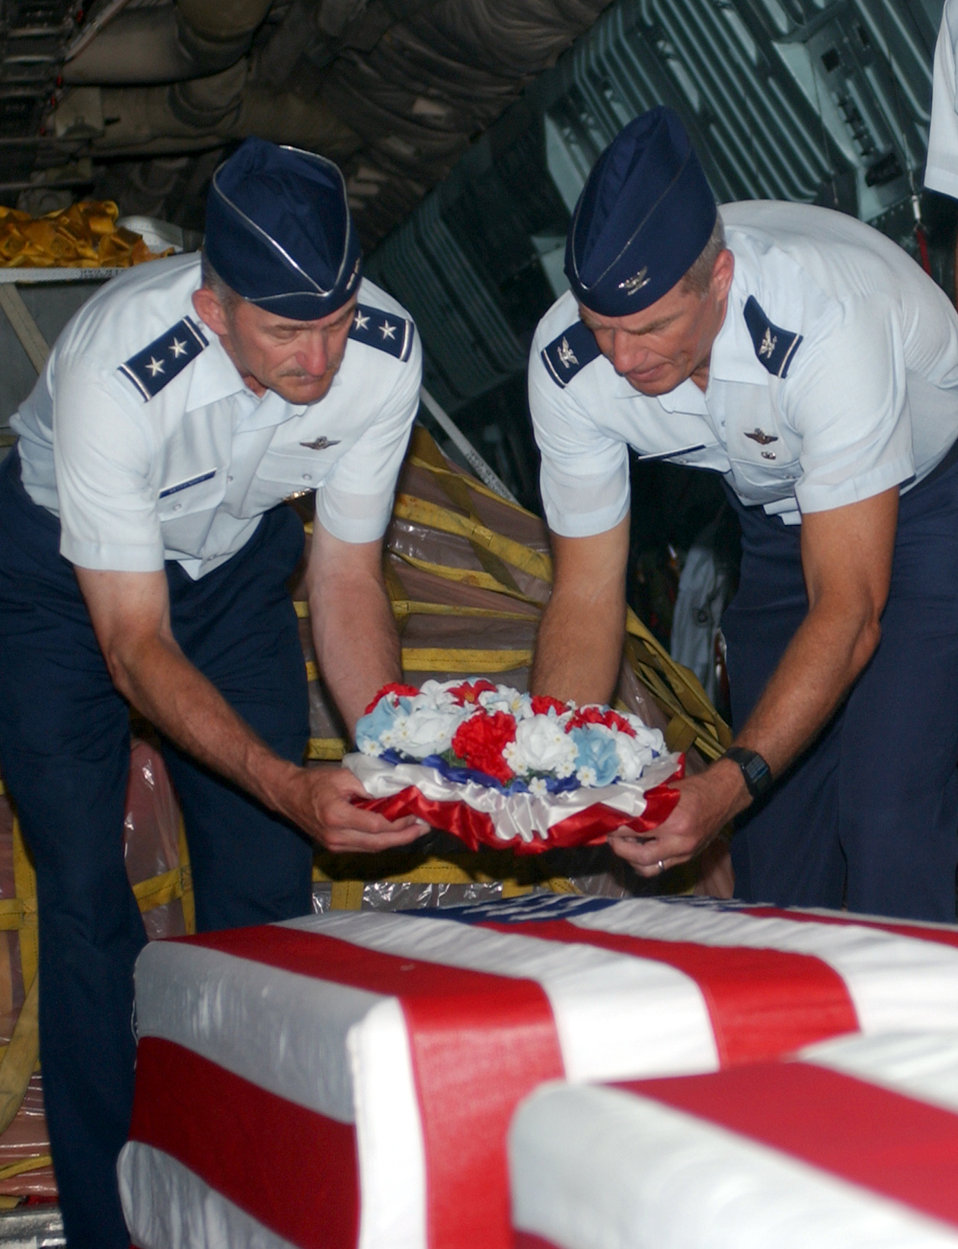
Airmen pay respect during repatriation ceremony

ANDERSEN AIR FORCE BASE, Guam -- Maj. Gen. Edward Mechenbier (left) and Col. Gregg Sanders lay a wreath on one of two transfer cases containing the remains of servicemembers from the Vietnam War during a repatriation ceremony here May 29. General Mechenbier is the last Airman still serving who was a prisoner of war during Vietnam. He flew the Hanoi Taxi on this mission to bring his fallen comrades home. The Hanoi Taxi became the first C-141 Startlifter to repatriate American POWs from Vietnam on Feb. 12, 1973. Colonel Sanders is the 13th Air Force vice commander.